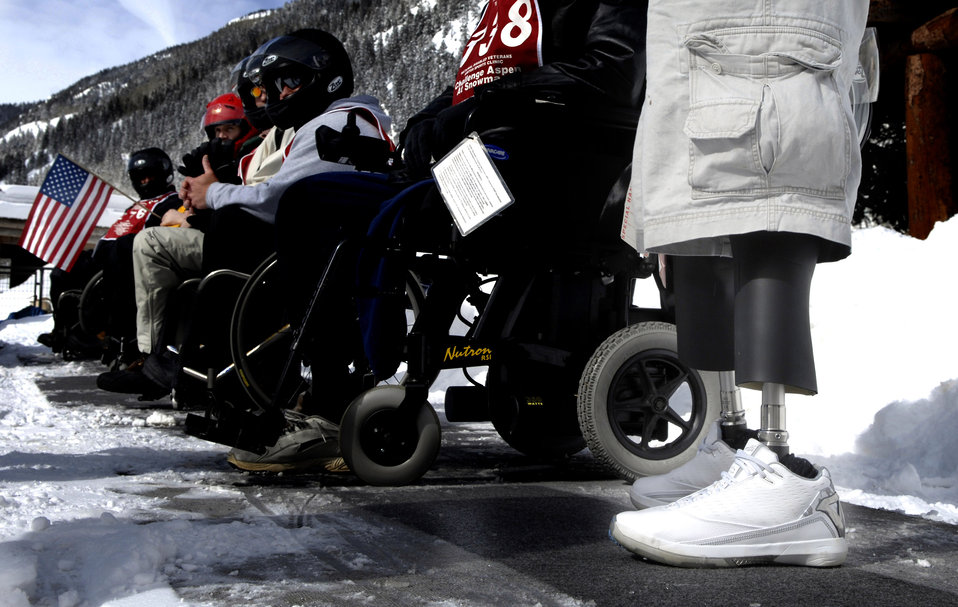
Winter sports clinic helps veterans

Several disabled veterans prepare to jump on snowmobiles during the 22nd National Disabled Veterans Winter Sports Clinic held at the Snowmass Village, Colo., April 2. Participation is open to service veterans with traumatic brain injuries, spinal cord injuries, orthopedic amputations, visual impairments, certain neurological problems and other disabilities. The annual disabled learn-to-ski clinic helps motivate and rehabilitate disabled Department of Defense veterans. It is the largest of its kind in the world. The clinic instructs veterans on Alpine and Nordic skiing, rock climbing, snowmobiling, sled hockey, and more.